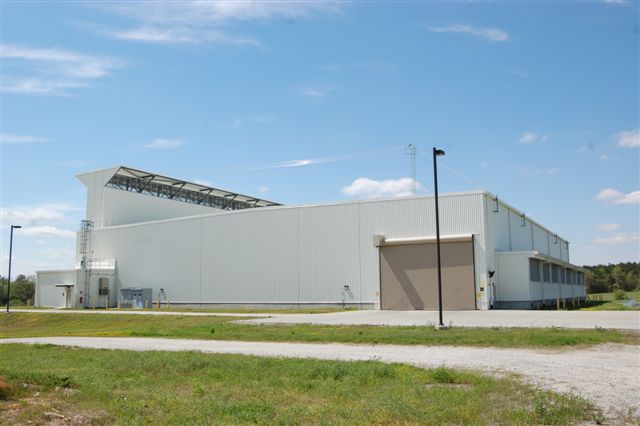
Glass waste storage building #2 at Savannah River Site.
At the Glass Waste Storage Building, canisters are lowered into an underground reinforced concrete vault containing 2,286 individual canister supports. The canisters will be stored at SRS until a Federal repository is established.